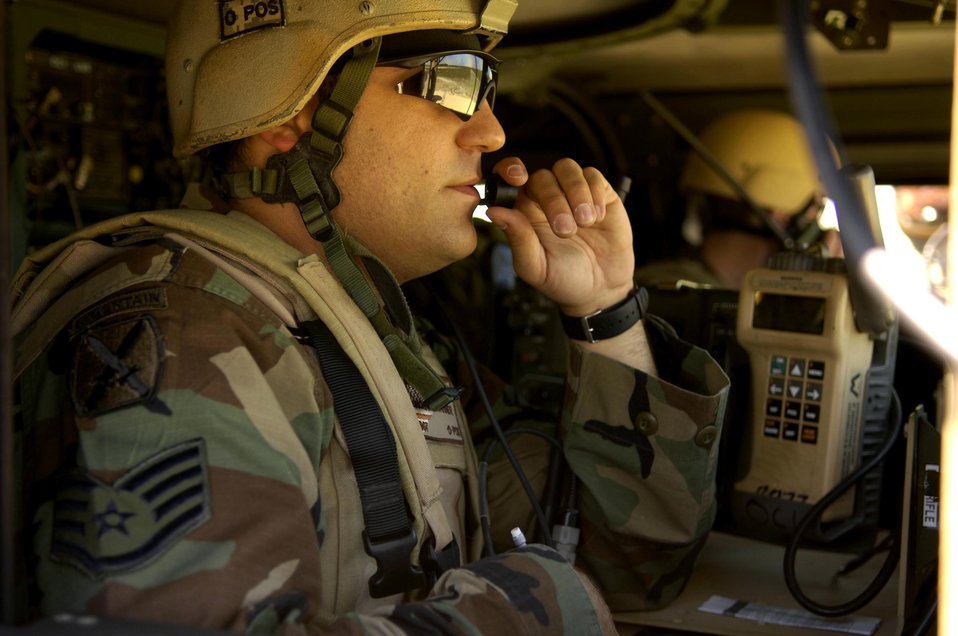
Atlantic Strike V begins in Avon Park

Staff Sgt. Mike Warner relays grid coordinates to an A-10 Thunderbolt II pilot in the air during Atlantic Strike V on April 16 at Avon Park, Fla. Atlantic Strike is a joint forces training event involving joint terminal attack controllers from the Army, Air Force and Marines and is held semi-annually at the Avon Park Air Ground Training Complex. Sergeant Warner is a joint terminal attack controller assigned to the 274th Air Support Operations Squadron in Syracuse, N.Y.